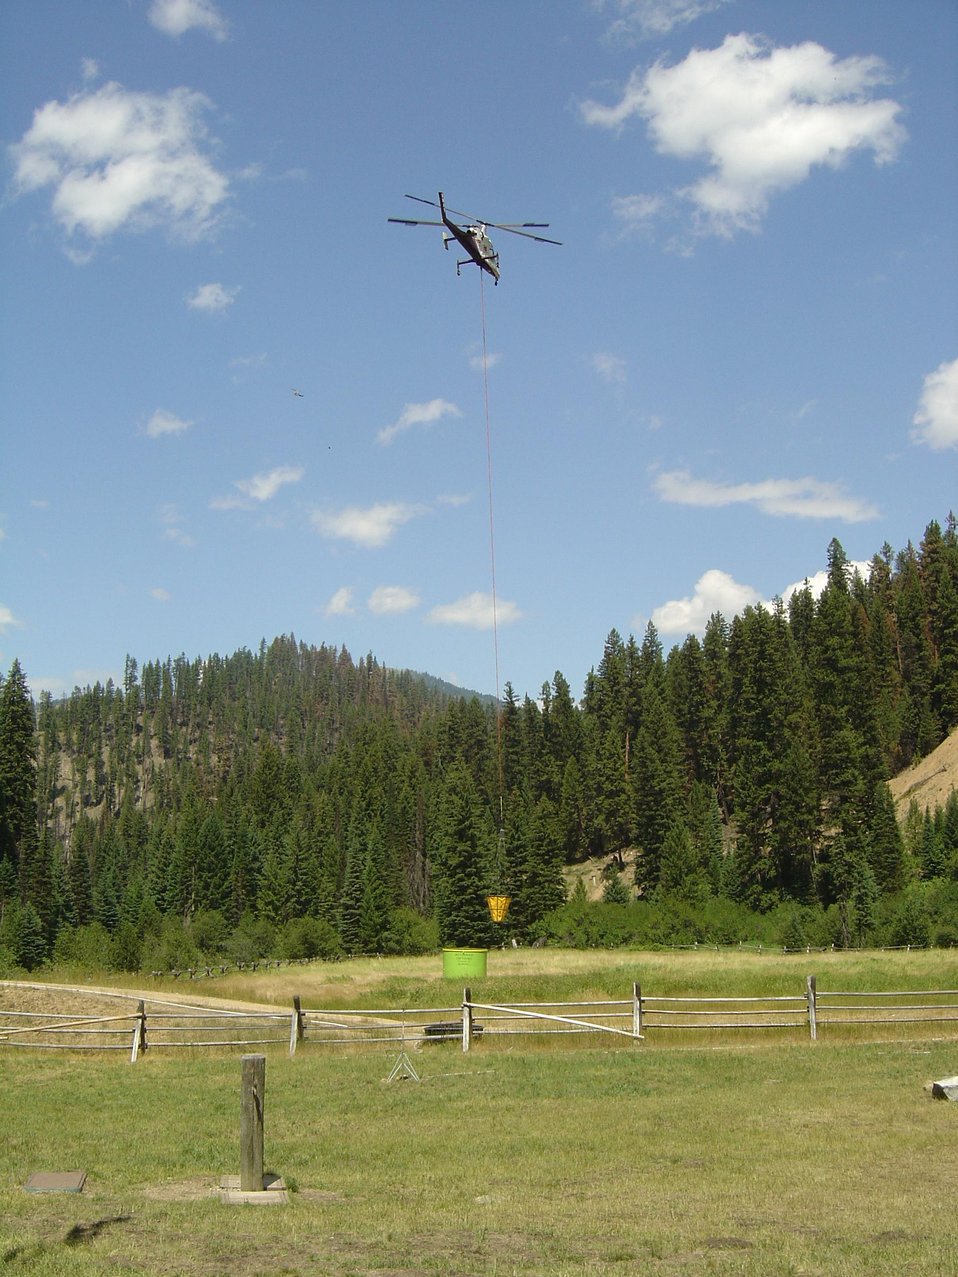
A K-MAX Type 1 helicopter gets a load of water at the Magruder Portable Dip Tank to fight the Gold Pan Fire in the Bitterroot National Forest. The K-Max helicopter is a single seat aircraft that, unlike other helicopters, operates without a tail rotor. The Gold Pan Fire in the Bitterroot National Forest near Conner, MT began by lightning on Jul. 16, 2013 by lighting have consumed approximately 16,330 acres.